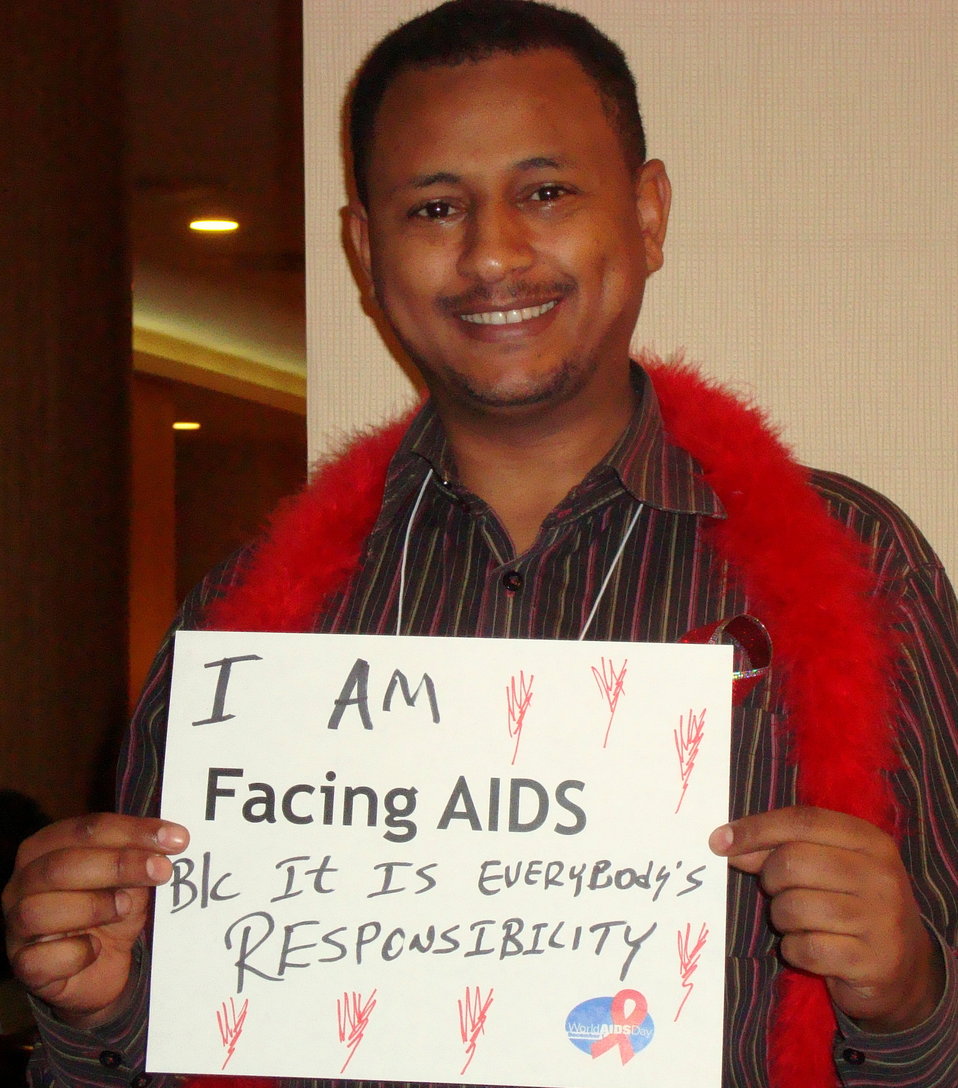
FacingAIDSCampaign 033